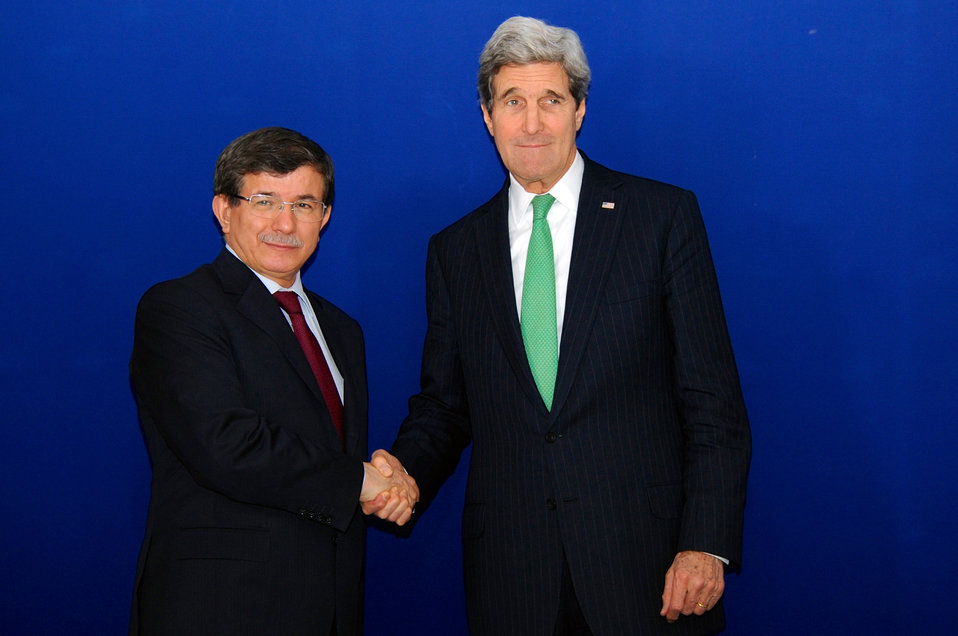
U.S.-Turkish Delegations Meet on Margins of Munich Security Conference

U.S. Secretary of State John Kerry, Turkish Foreign Minister Ahmet Davutoglu, and their respective teams sit down for a bilateral meeting on the margins of the Munich Security Conference in Munich, Germany, on February 1, 2014.